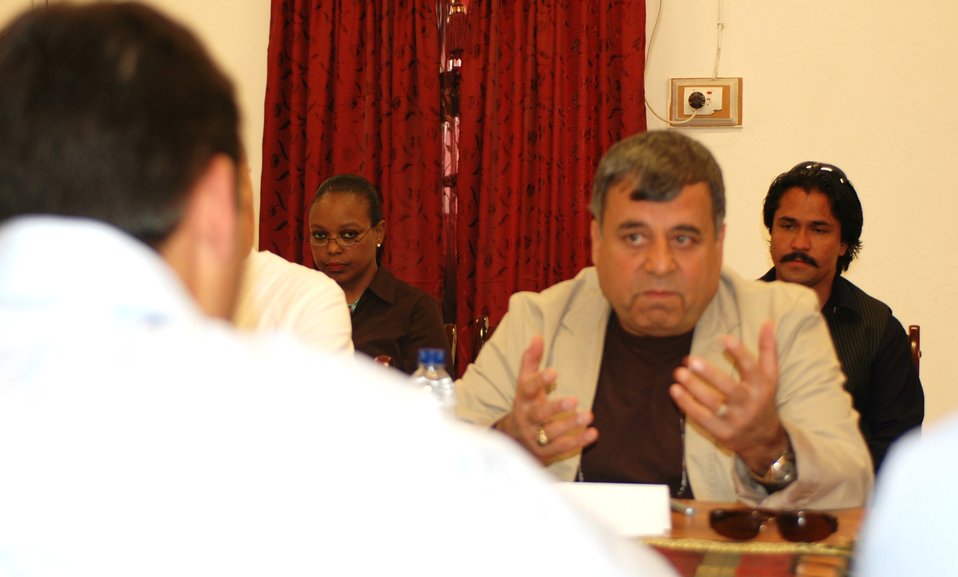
Dr Shah Visits Kandahar April 9, 2010